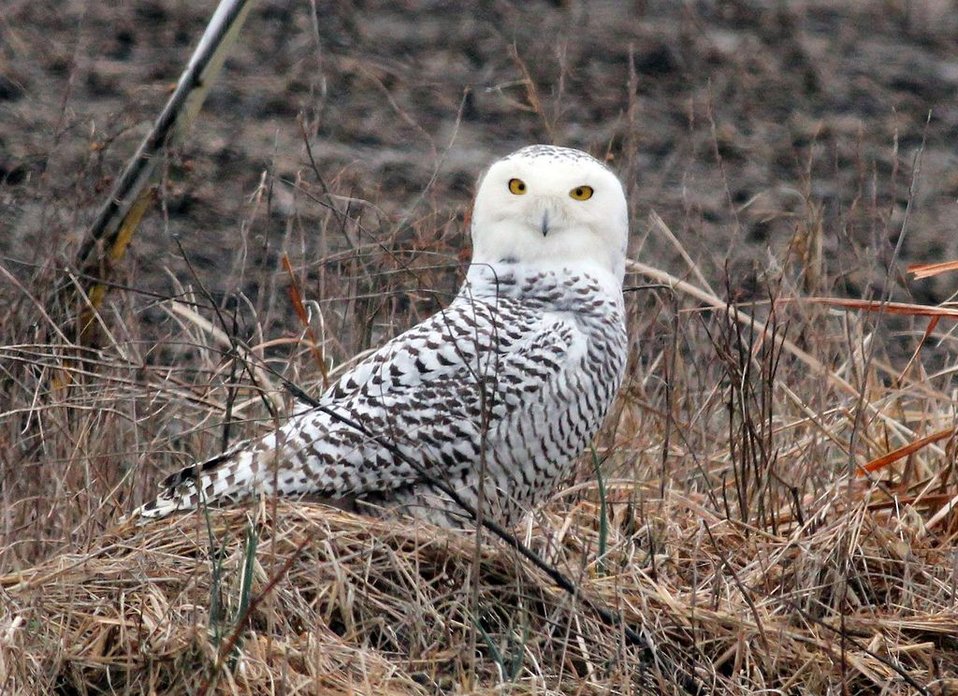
Near Cypress Creek National Wildlife Refuge, IL Credit: John Schwegman/USFWS